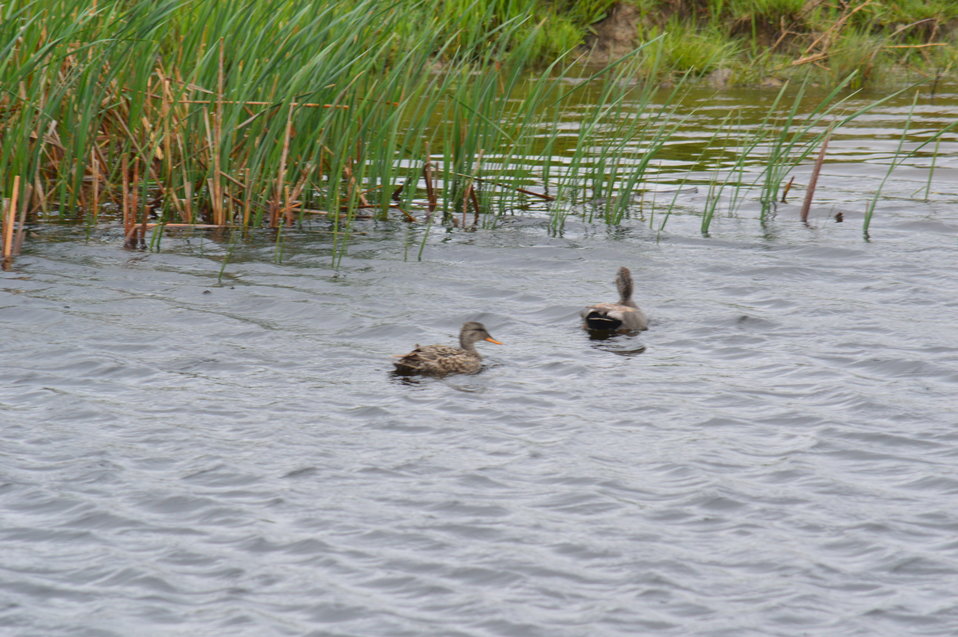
Waterfowl

Scenery and wildlife and Audubon National Wildlife Refuge in North Dakota.